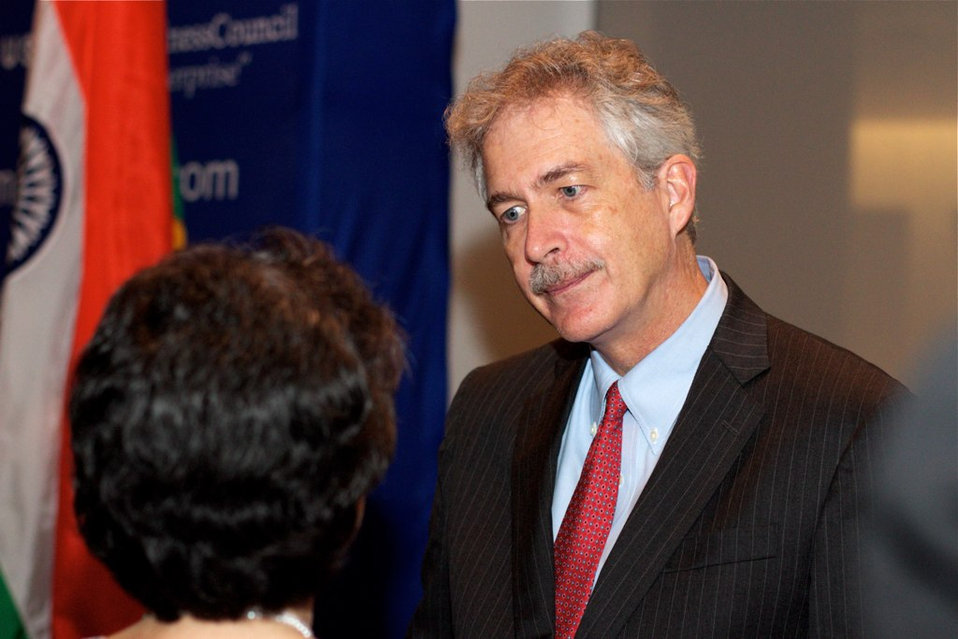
Deputy Secretary Burns Participates in the U.S.-India Higher Education Summit

Deputy Secretary of State William Burns, second from left, participates in the U.S.-India Higher Education Summit at Georgetown University in Washington, D.C., on October 13, 2011.